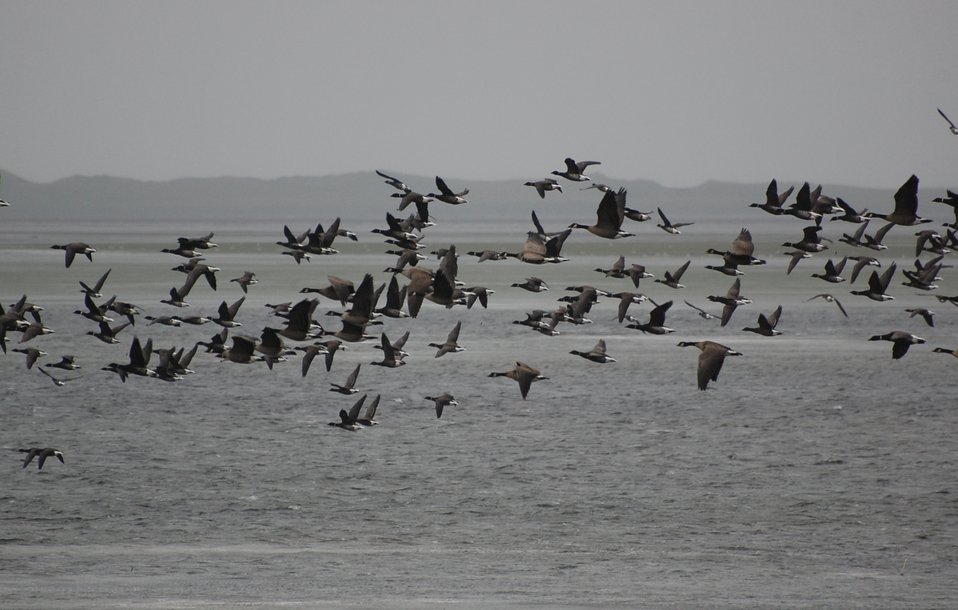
Brant at Izembek Lagoon

Izembek National Wildlife Refuge